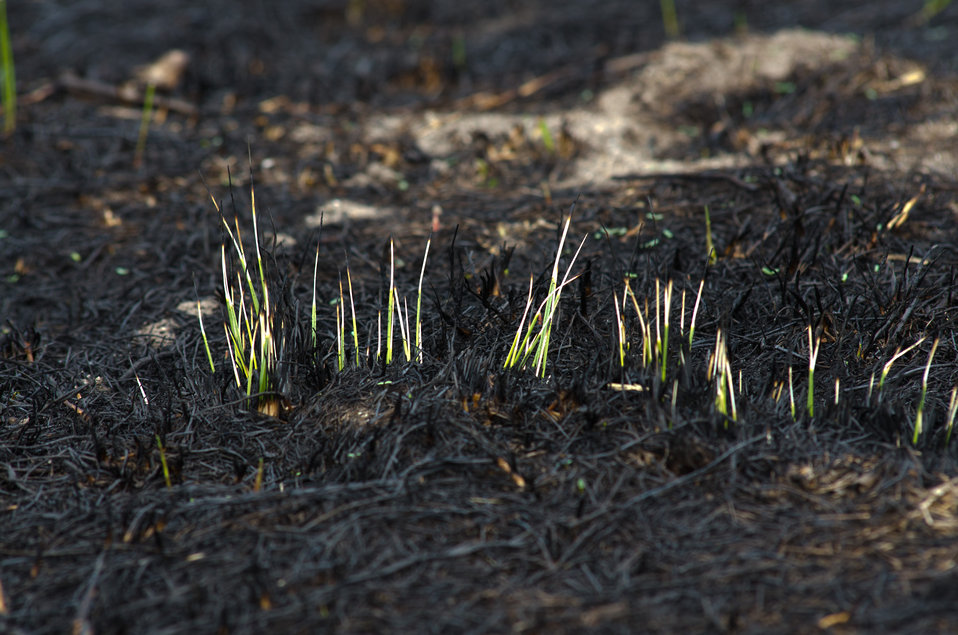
One week ago Aransas National Wildlife Refuge, in Austwell, TX, on Friday, December 16, 2011 used prescribed burns on this portion of the refuge. Typical of a coastal prairie shoreline, natural occurrences of fire are part of a healthy ecosystem. Phragmites reed grass and other plant roots stabilize the ground and were unharmed by the fire. Healthy growth is already seen from the charred grass and ashes on the ground. A refuge road also serves as an effective firebreak.
State Conservationist Salvador Salinas commented on the USDA-NRCS Gulf of Mexico Initiative (GoMI) during a press conference, about improving water quality, habitat, and the health of the Gulf ecosystem. “Launching this initiative is a top priority for NRCS in Texas because the Gulf of Mexico is one of our state’s premier natural resources. It provides vital habitat for wildlife, and creates jobs in industries that depend upon them. The health of this resource is essential to Texas as well as to the nation,” said Salvador Salinas. The Texas initiative focuses on three watersheds in Refugio, Calhoun, Victoria and Aransas counties and ultimately the Gulf of Mexico.
“What is really compelling about GoMI and other similar conservation efforts is that they prove that Texas farmers and ranchers not only feed and clothe us and power our vehicles, but they can also help protect and restore our rivers and provide more habitat for wildlife,” stated Salinas. “That’s why it is important that this conservation project is not about taking productive farm land out of production. This is a working lands initiative, so that not only are we helping to restore the health of the Gulf, but we’re also helping to sustain and enhance the productivity of the Gulf’s farms and ranches.”
Nationally, USDA-NRCS is dedicating up to $50 million over three years to this effort.
NRCS will continue to provide proven technical expertise and that of their partners. The anticipated result is improved water quality, stream flows and wildlife habitat.